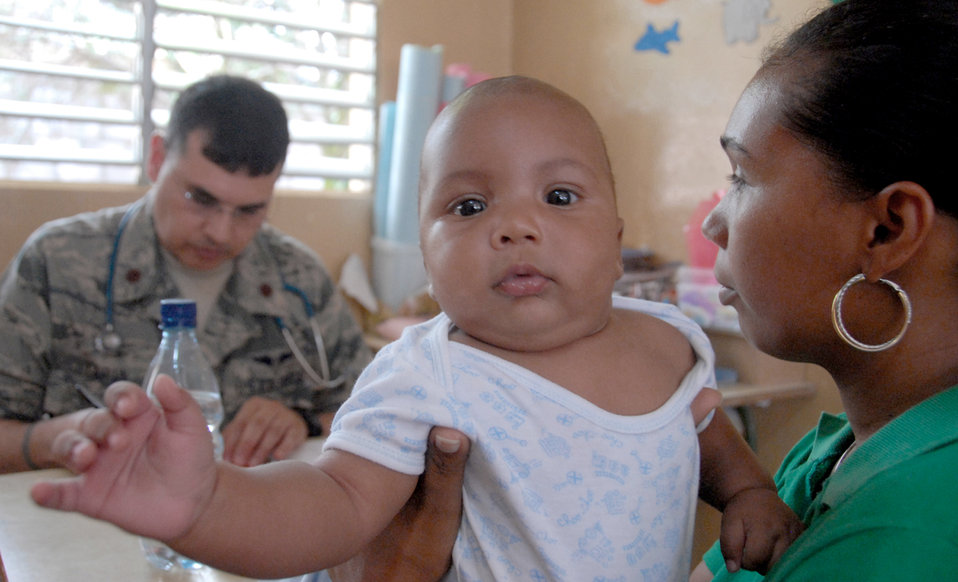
Team provides medical care in Dominican Republic

Maj. (Dr.) Javier Tapia checks a Dominican baby during a medical readiness exercise May 24, 2010, in the Dominican Republic. A team of 39 medical specialists from Air Force Reserve Command is providing medical care to four towns in the Puerto Plata region of the country. Doctor Tapia is a physician with the 908th Aeromedical Staging Squadron at Maxwell Air Force Base, Ala.